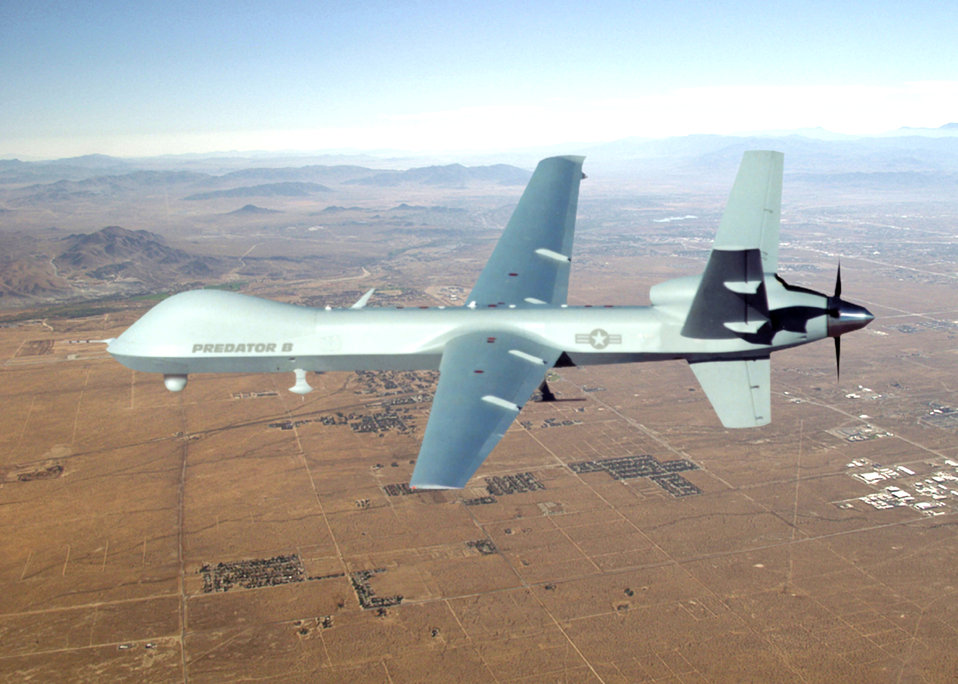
'Reaper' moniker given to MQ-9 unmanned aerial vehicle

The